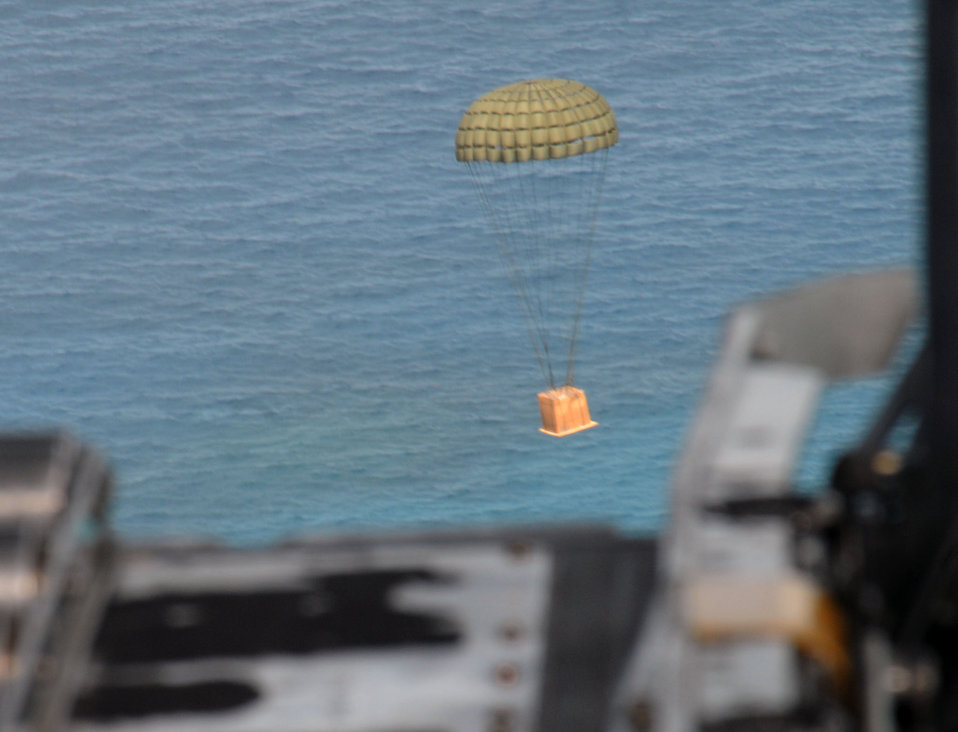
Operation Christmas Drop

Donated goods drop to a planned location on the Chuuk Islands Dec. 16, 2009, as part of Operation Christmas Drop. The operation, which began in 1952, is the Air Force's longest-running humanitarian mission. Airmen today continue the tradition delivering supplies to remote islands of the Federated States of Micronesia.